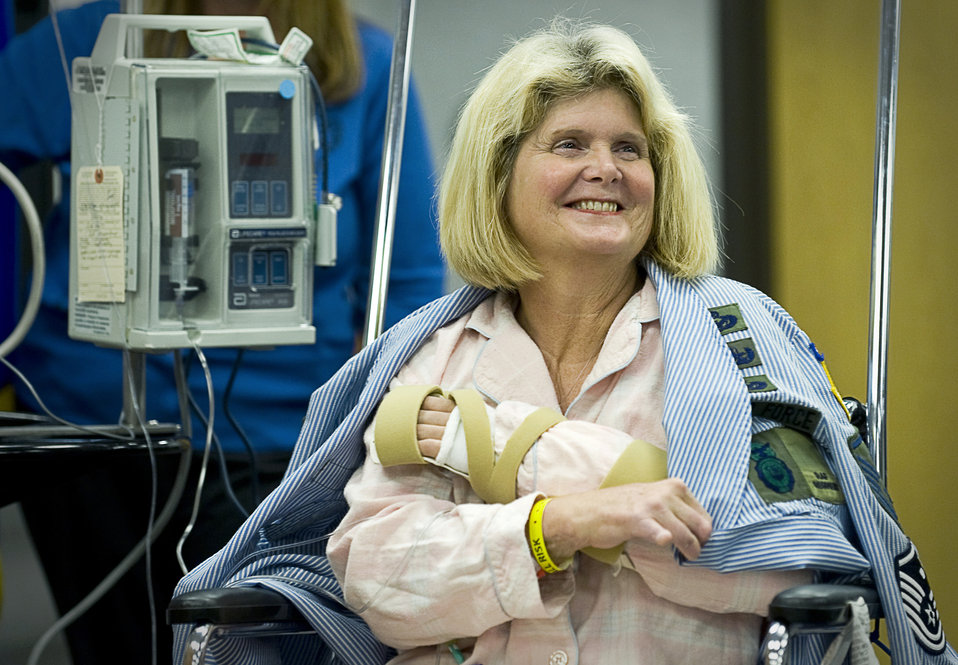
Doctors perform first hand transplant in DOD

Retired Master Sgt. Janet McWilliams became the first female to undergo a hand transplant Feb. 17, 2010, at the Wilford Hall Medical Center, Texas. She is the 10th person to undergo the procedure in the U.S. and the first to have it done at a Defense Department facility.